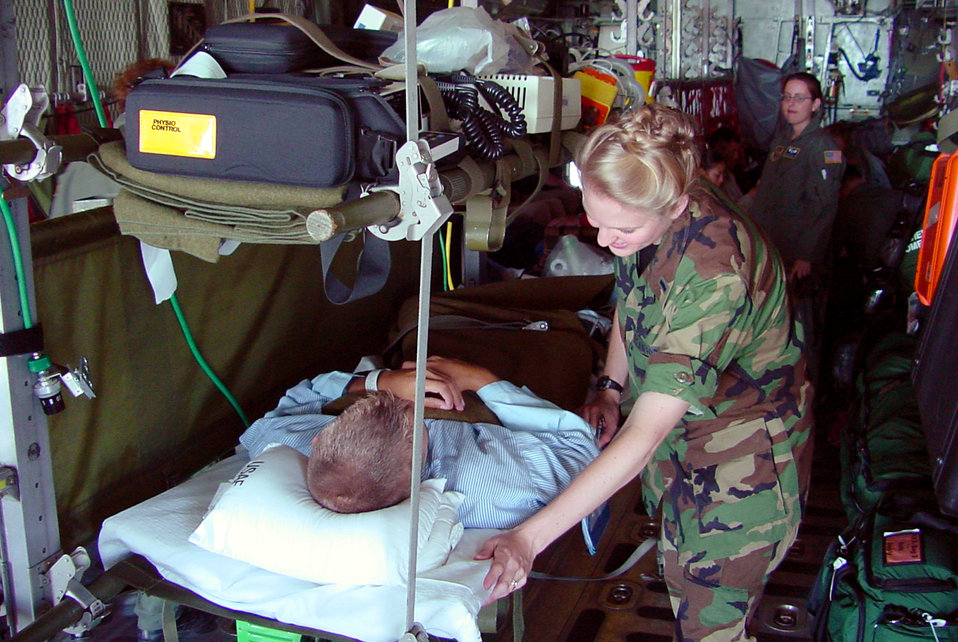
Abel

TRAVIS AIR FORCE BASE, Calif. -- First Lt. Sarah Abel tends to the needs of an injured servicemember aboard a C-130 Hercules. Abel is an ASF clinical nurse from the David Grant Medical Center here.